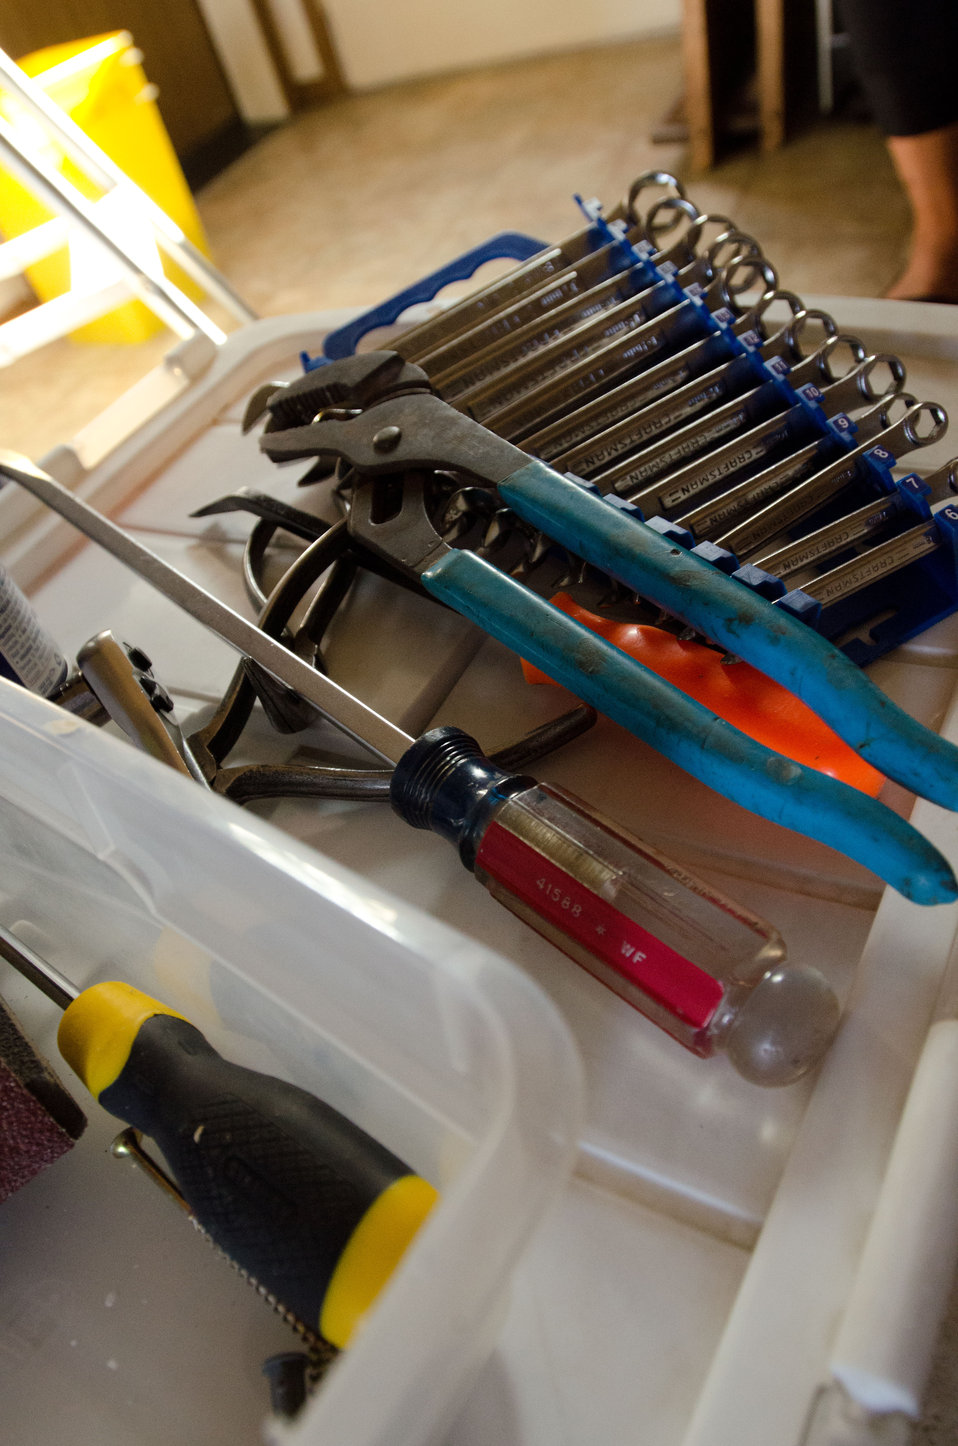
Colorado native and business owner Bruce Longwell’s tools at his Durango, CO home on July 17, 2012. Mr. Longwell financed the single-family house with a U.S. Department of Agriculture (USDA) Rural Development (RD) Housing Assistance loan. This provided lower monthly payments than his prior rental home. Homeownership provides potential gains through home equity.